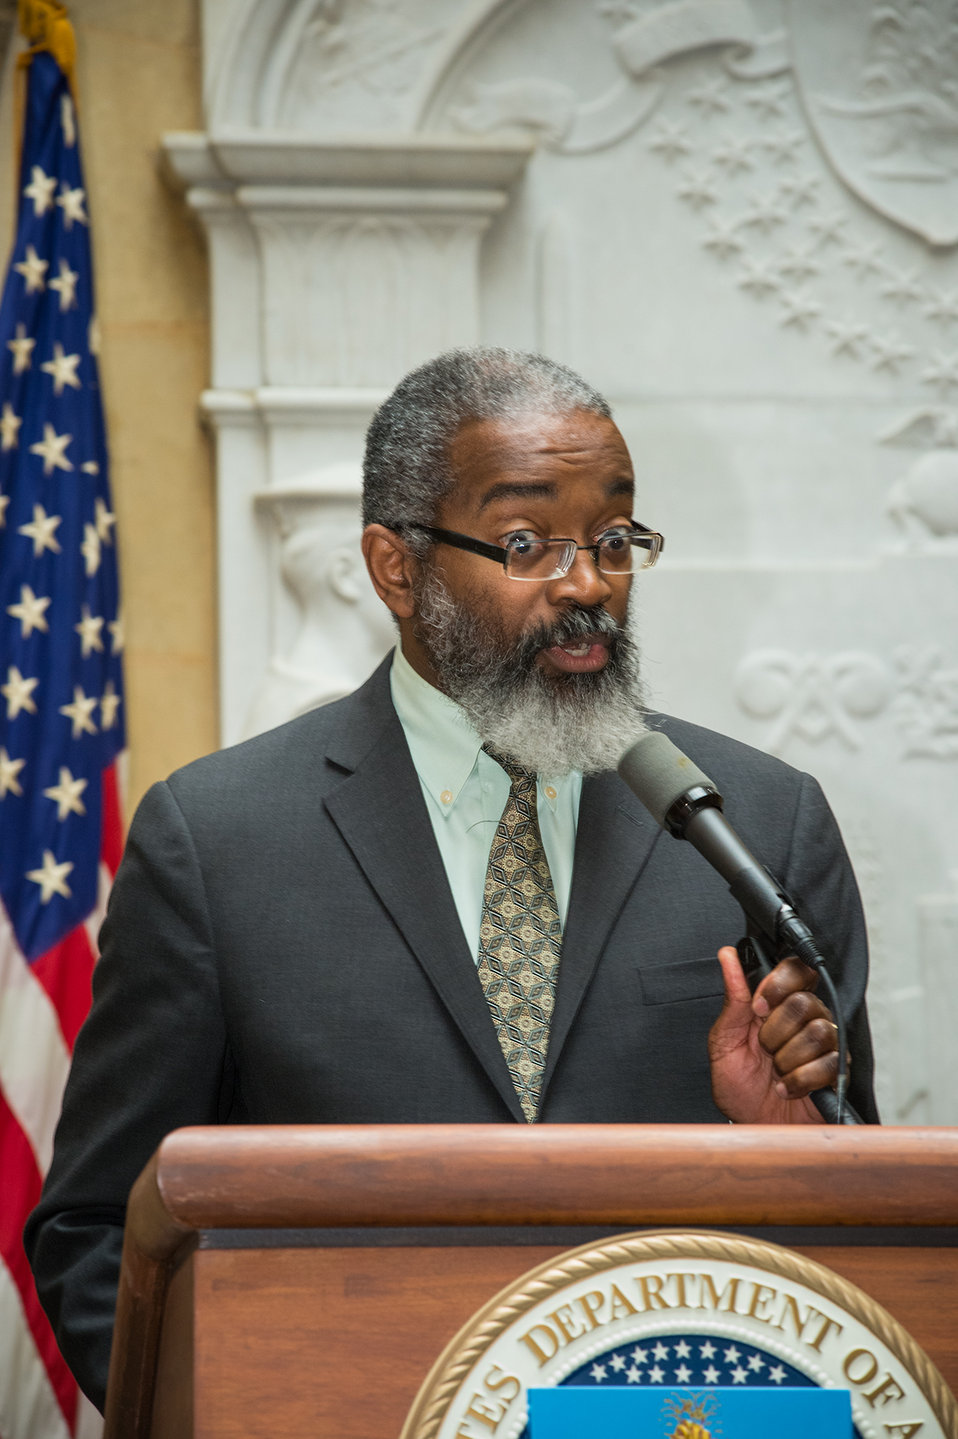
U.S. Department of Agriculture (USDA) Assistant Secretary for Administration Dr. Gregory Parham offers closing remarks at USDA’s Unsung Hero Awards at USDA in Washington, D.C. on Wednesday, May 7, 2014. USDA’s Organization of Professional Employees (OPEDA) in cooperation with USDA Departmental Management (DM) presented the “Unsung Hero Awards” to USDA employees who have demonstrated extraordinary effort in performing tasks, who have unselfishly shared time and expertise, and consistently and willingly extended a helping hand. They were also recognized for their contributions to transforming the culture of USDA.